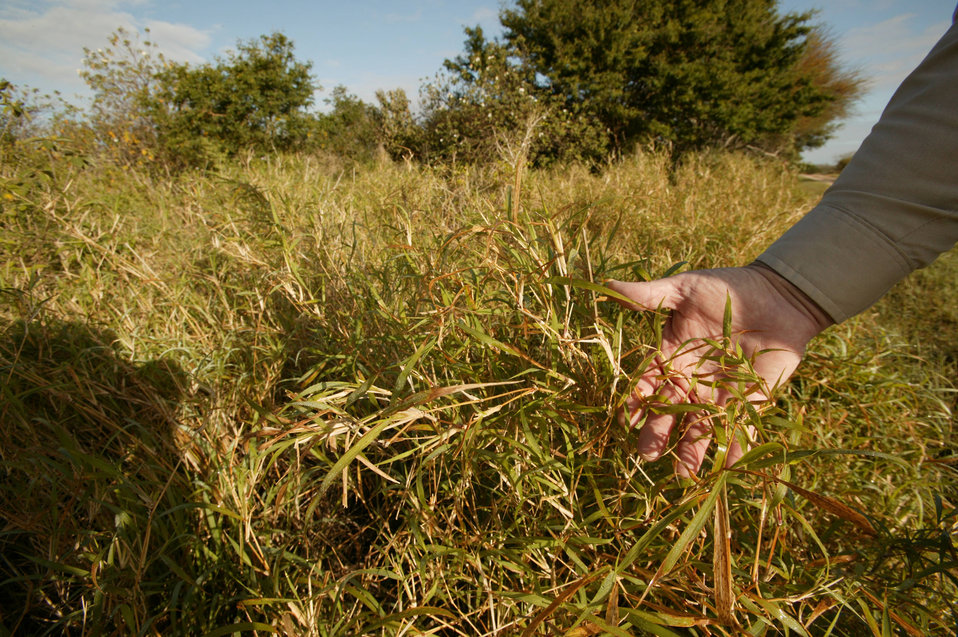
Buffle Grass, an invasive species

Photo credit: USFWS/Steve Hillebrand

The buffelgrass invasion has forever changed the southwestern desert ecosystems by crowding out native plants and fueling frequent and devastating fires in areas where fires were once rare